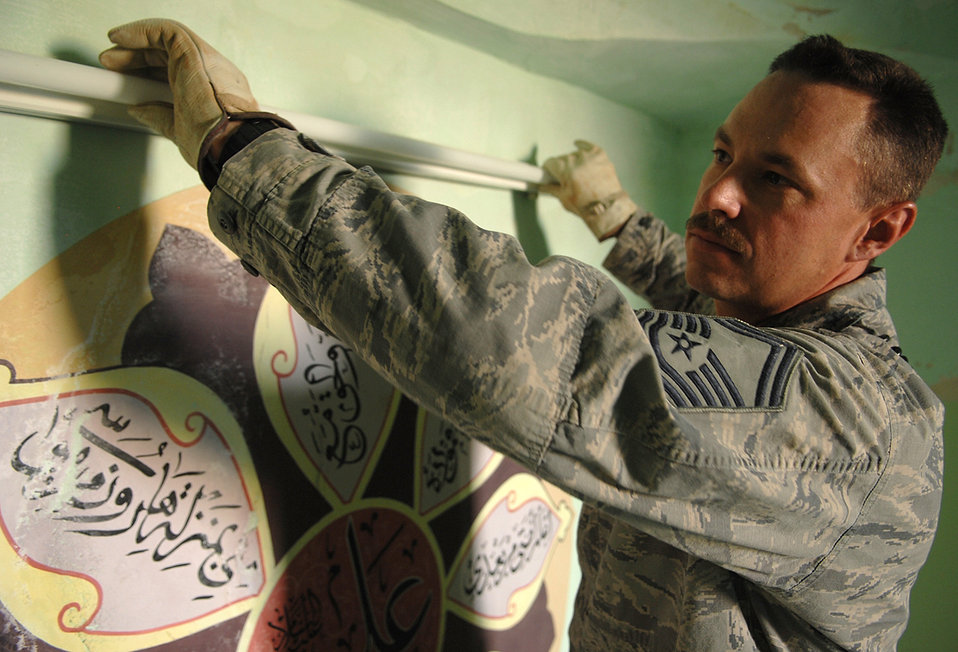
Coalition team restores Iraqi shrine

Senior Master Sgt. Gary Lytle, 506th Expeditionary Civil Engineer Squadron electrical systems superintendent, places a fluorescent light bulb into a fixture he repaired inside the Sultan Saqi Shrine. Sergeant Lytle provided temporary power to the shrine and repaired electrical outlets in its rooms prior to an official visit of Iraqi family members and local leaders in May.